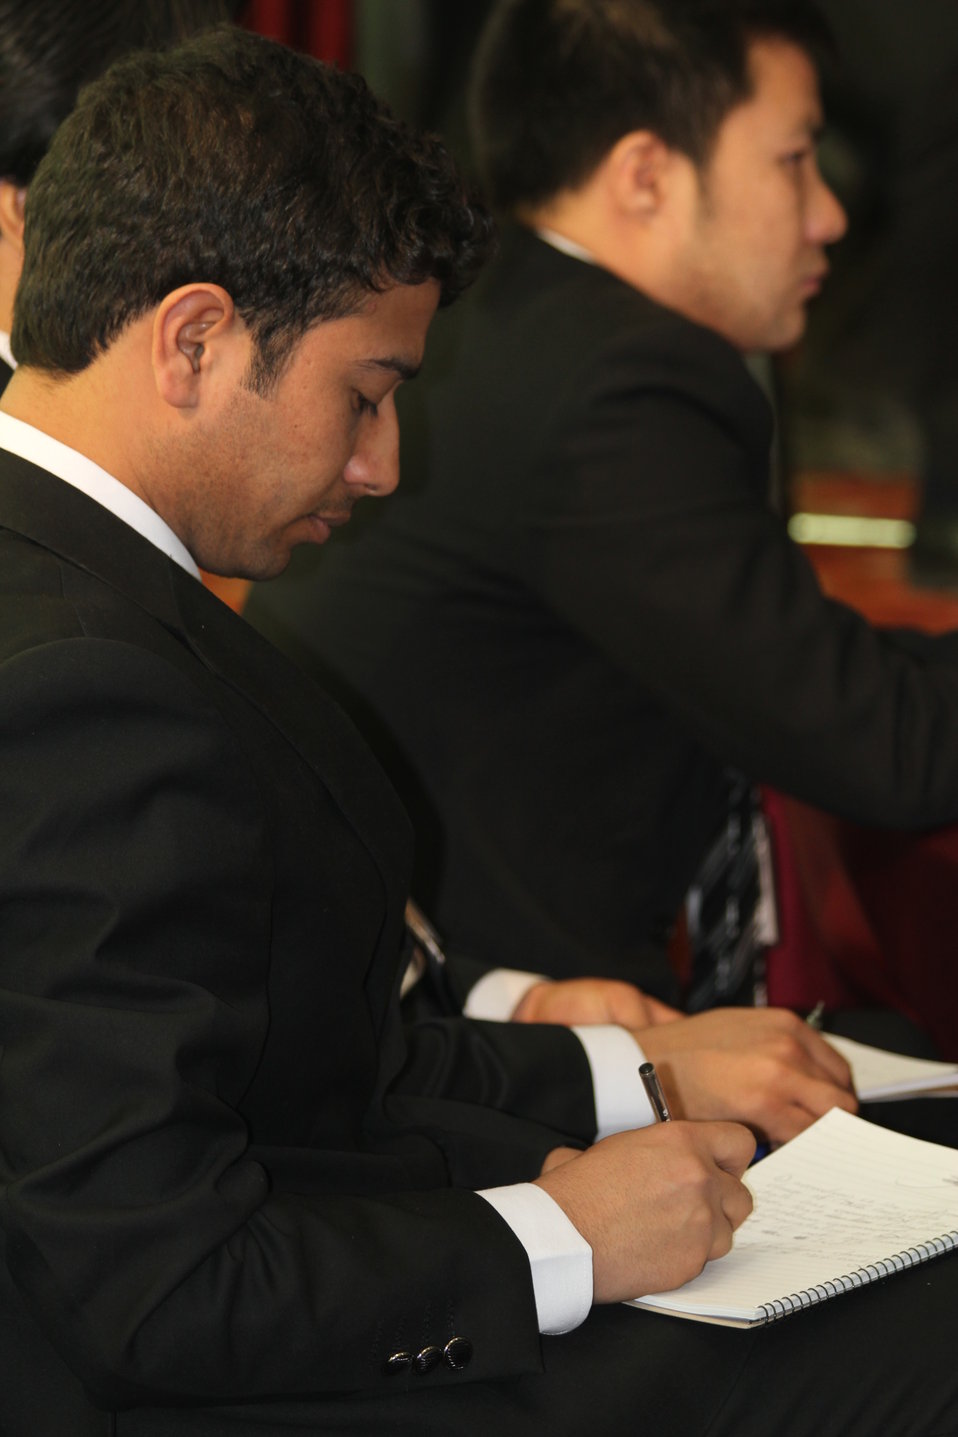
Notes

Student from Balkh take notes during Jessup Moot Court, January 11, 2012